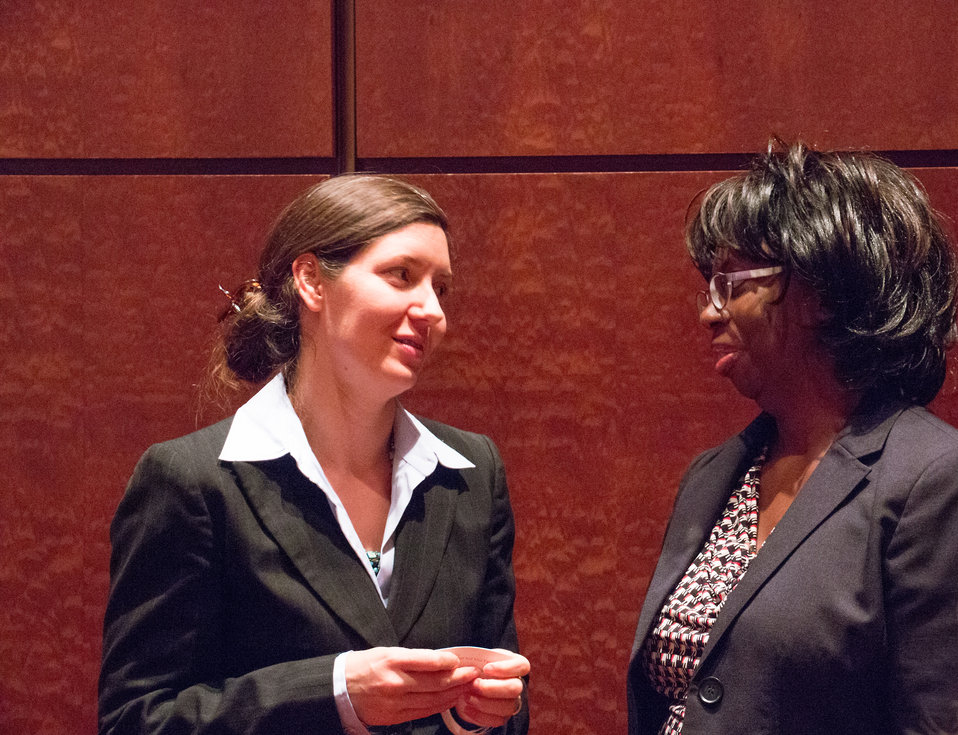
VHAP Launch (490 of 511)